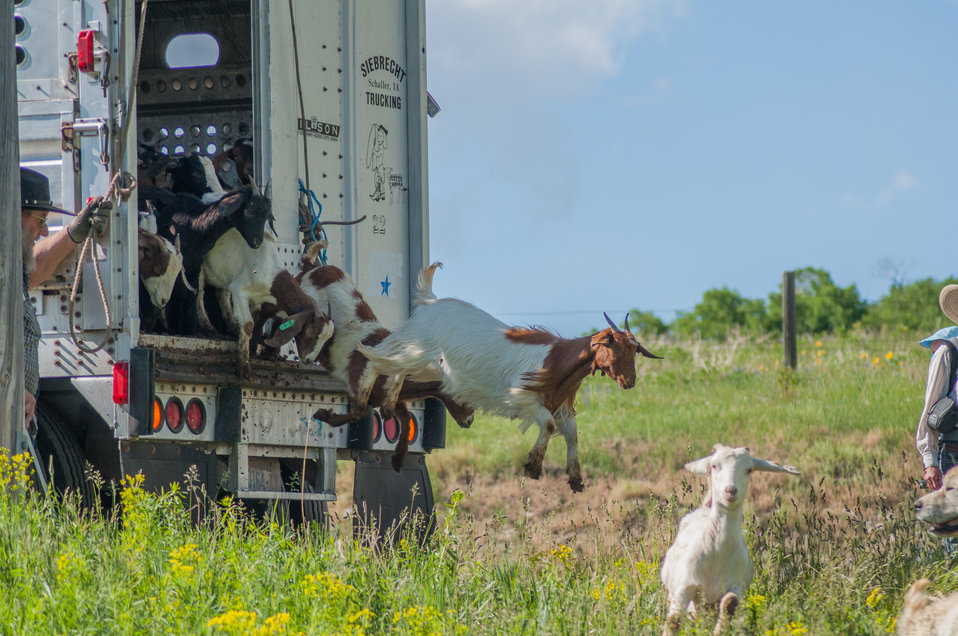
Goat landing on Bozeman Fish Technology Center

On June 8 at 5:00 p.m., 409 yearling domestic goats were off-loaded on the Bozeman Fish Technology Center (BFTC) campus. Thus begins a 3-4 year project of monitored targeted grazing and applications of friendly insects to control noxious weeds and manage brush overgrowth on property of the U.S. Fish and Wildlife Service BFTC.

Purposes of this effort are to reduce the presence of undesirable vegetation, promote restoration of native plants, and assist with fire protection by reducing burnable plant biomass.

The cooperative venture involves the U.S. Fish and Wildlife Service, Montana Outdoor Science School, Friends of the Bozeman Fish Technology Center, Gallatin Valley Land Trust, U.S. Forest Service, and Prescriptive Livestock Services. Integrated Weed Control is supplying the insects as an in-kind contribution to the project, and has applied insects on the BFTC’s 'hot spots' in previous years.